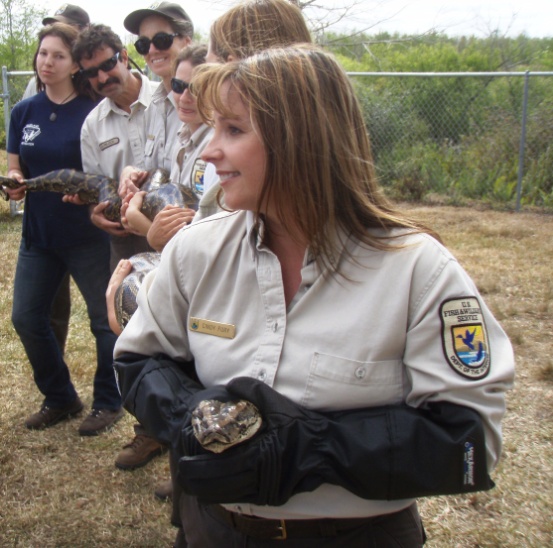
Cindy Brashear Fury, a Project Leader for Florida/Caribbean Field Office in the Migratory Bird Program, was in the Air Force when the first Gulf War broke out, stationed at Ramstein AFB in Germany working in the communications and encryption facility. She was one of the first to know when things were going to happen, and was head of Quality Control and briefed the generals on the status of communications throughout the European theater. But she modestly deflects praise: “I'm sure there are vets that actually served in the desert would be much more interesting and have more interesting pictures and stories.”